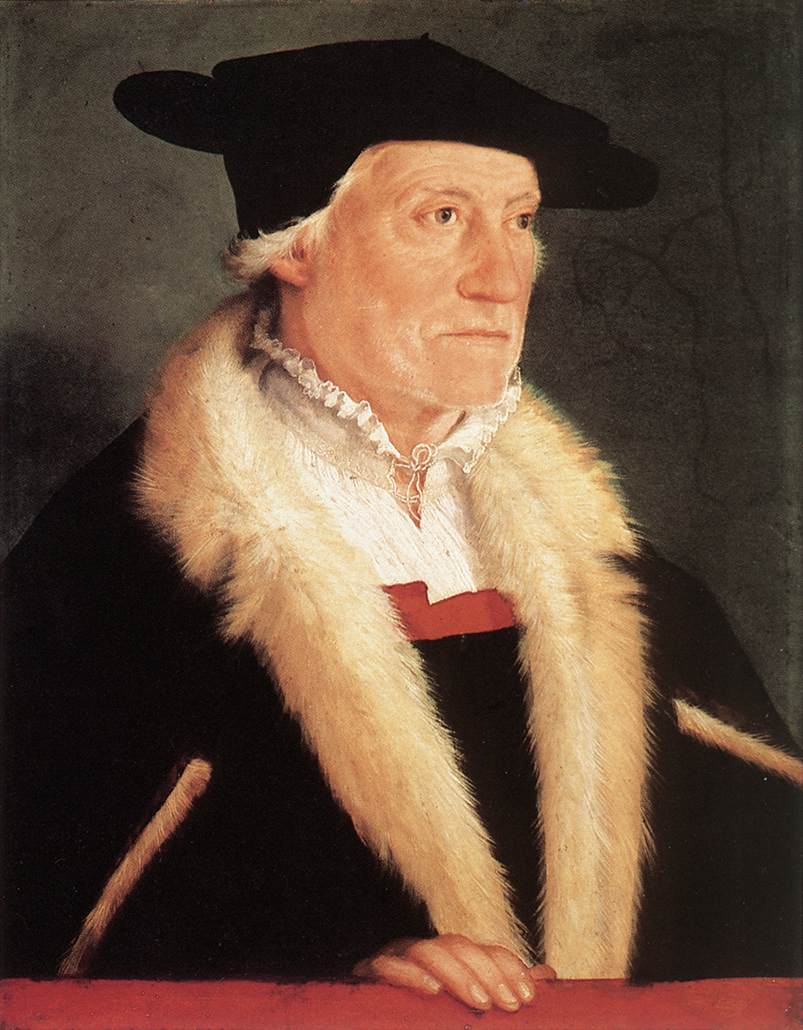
Portrait of the Cosmographer Sebastien Munster WGA